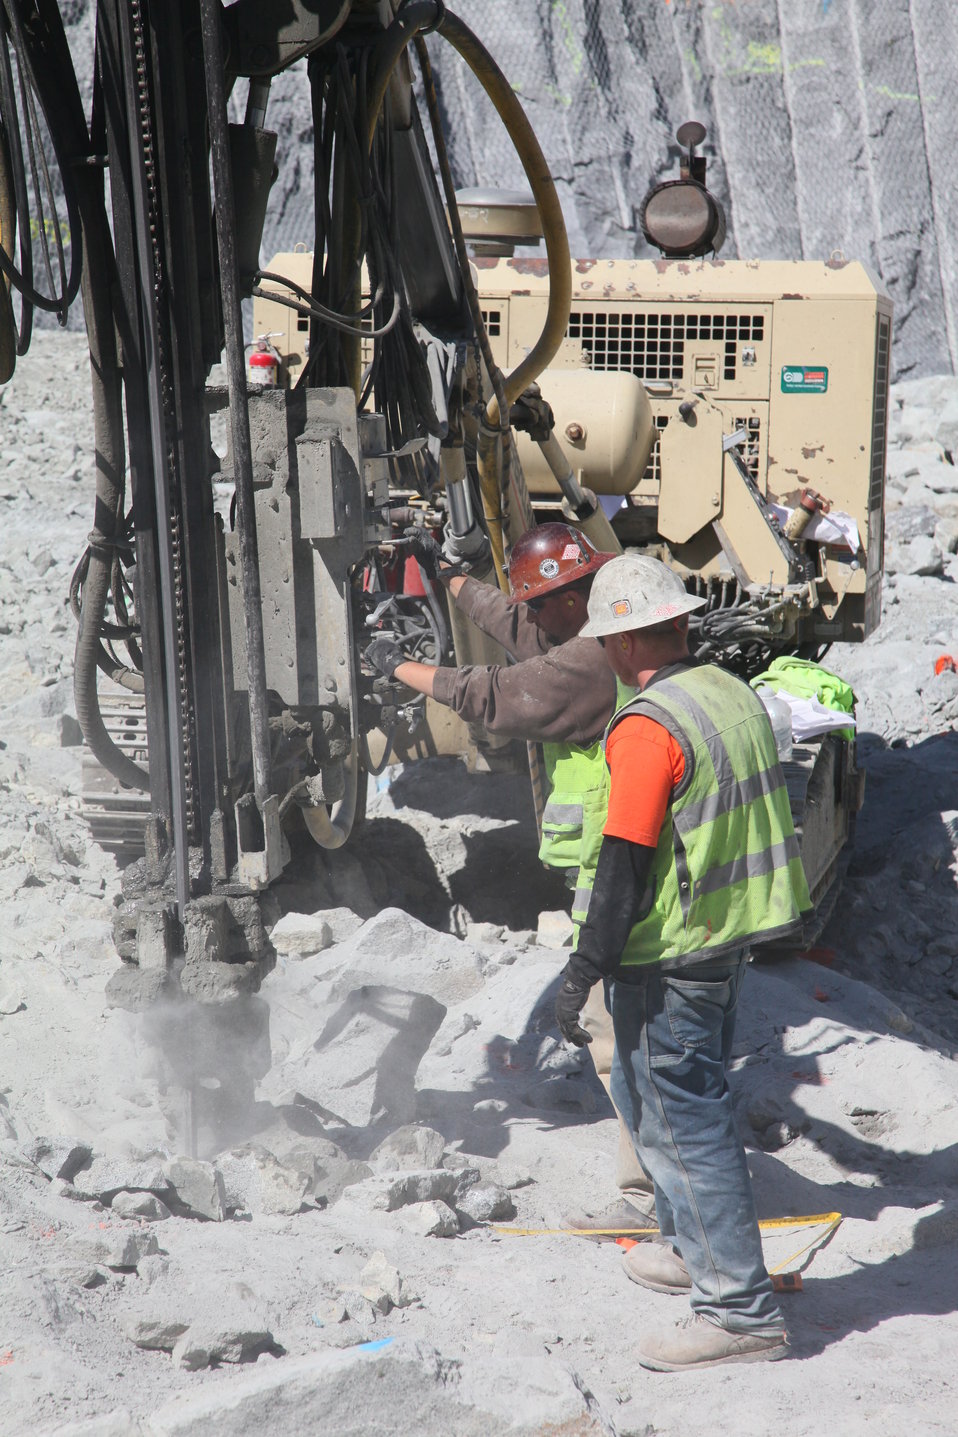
Drilling in the shear zone of the Folsom Dam auxiliary spillway

Contractors for the U.S. Army Corps of Engineers Sacramento District drill blasting holes in the rock at the Folsom dam auxiliary spillway site in Folsom, Calif., April 5, 2012. The rock will be blasted and removed from the shear zone. The spillway, scheduled to be ready for use in 2017, will allow Folsom Dam to release water sooner and more safely. The project is part of the Folsom Dam Joint Federal Project, a joint effort of the U.S. Army Corps of Engineers Sacramento District, the U.S. Bureau of Reclamation, the Central Valley Flood Protection Board and the Sacramento Area Flood Control Agency to improve the safety of the dam and reduce flood risk for the greater Sacramento area.